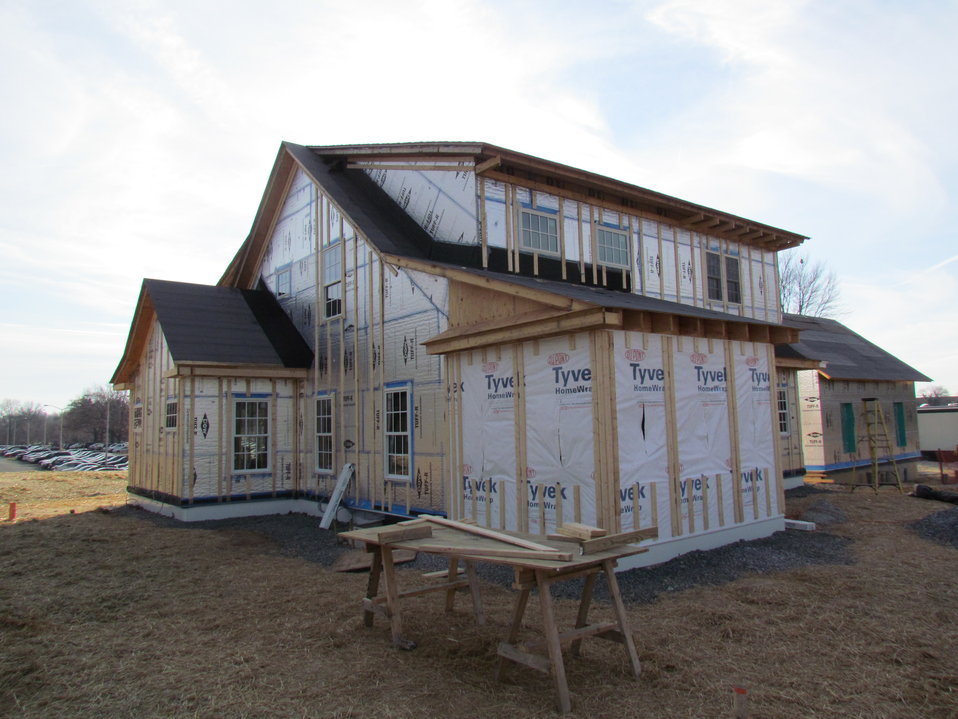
Net-Zero Energy Residential Test Facility – Construction photo showing rear of facility with wooden slats attached to exterior. The composite cement/fiberboard siding will be attached to these vertical slats.